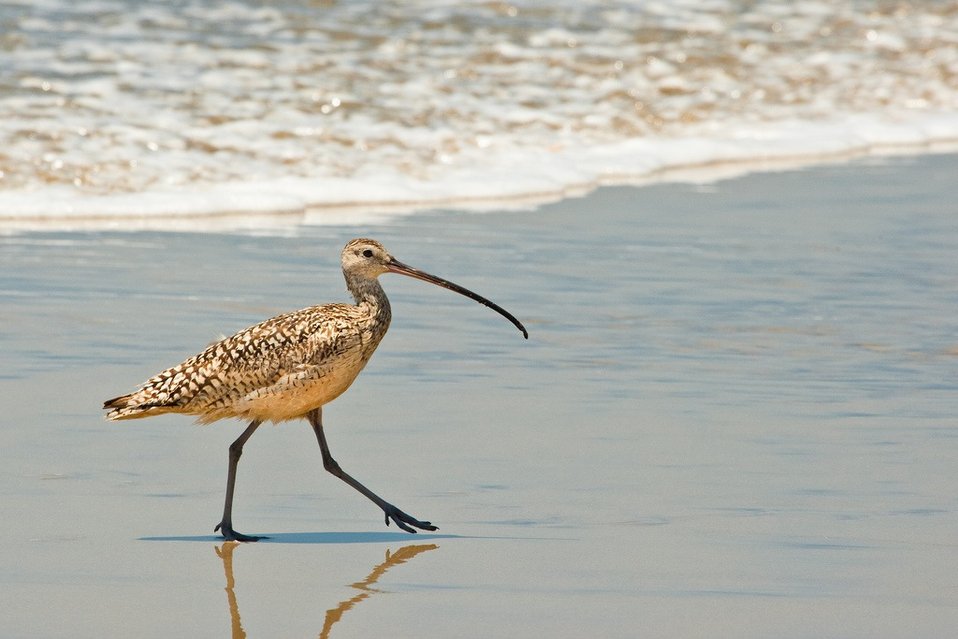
long-billed curlew

Tijuana Slough National Wildlife Refuge, CA